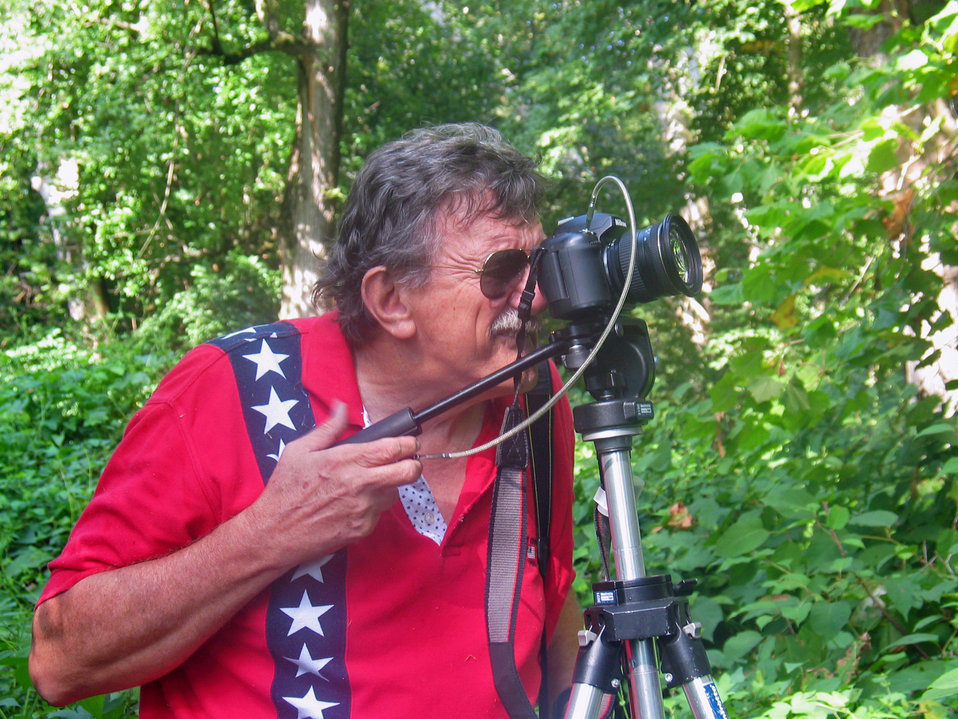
Photographer

Ohio River Islands National Wildlife Refuge, WV.